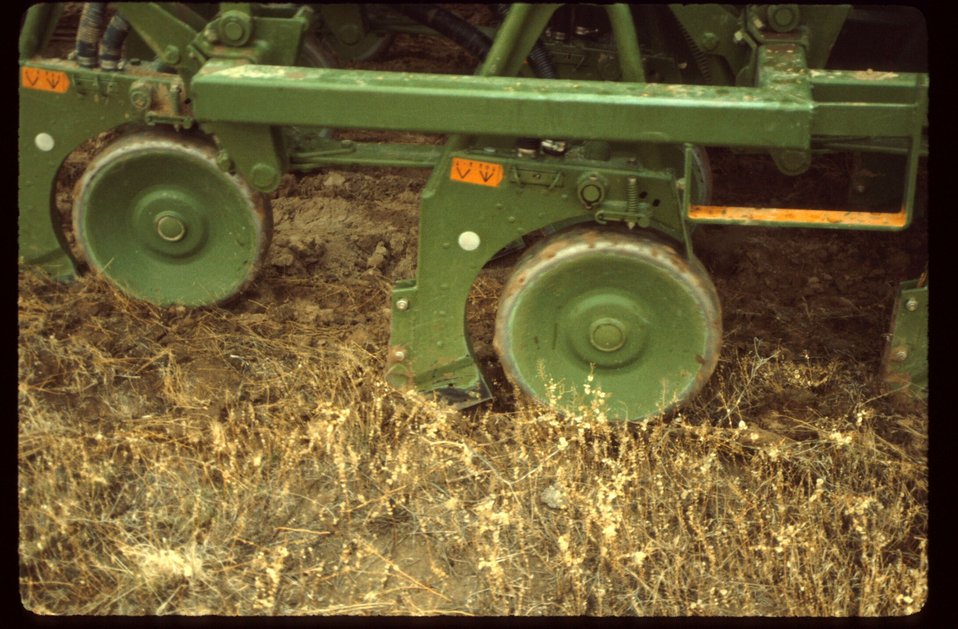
Range Restoration Project